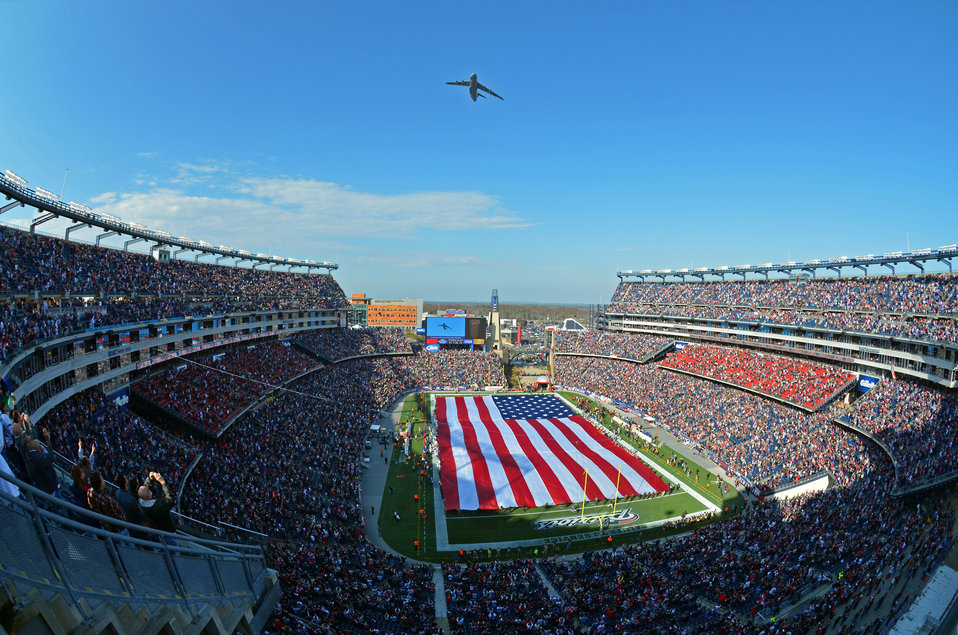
Fly over

A C-5 Galaxy flies over Gillette Stadium, Foxboro, Mass., Nov. 11, 2012. The fly over was prior to the Patriots kick off with an estimated crowd of more than 68,000. The aircraft is from the